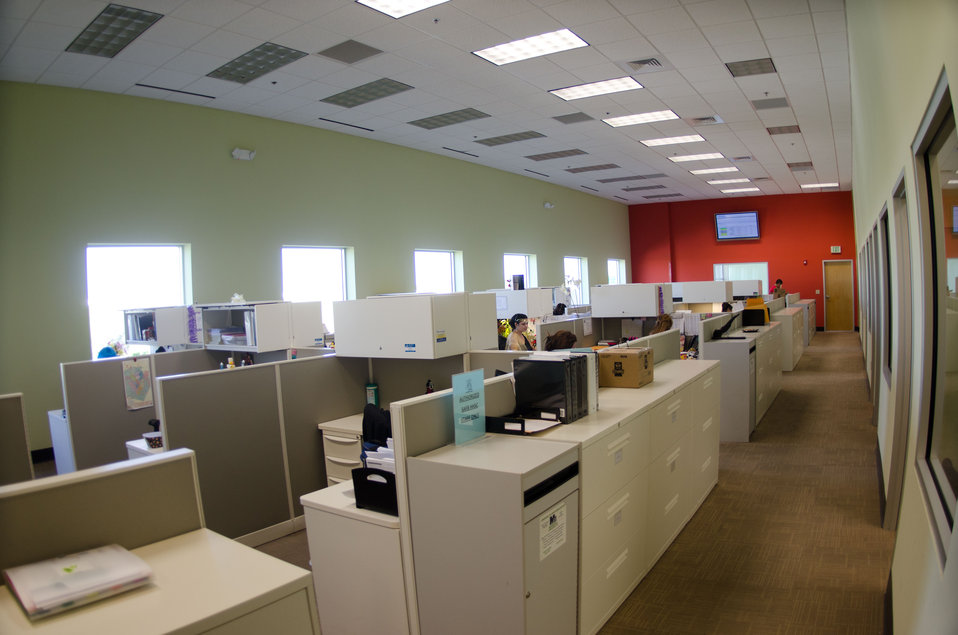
A person in need calling the San Antonio Food Bank (SAFB) on Monday, October 31, 2011 would have reached a Help Center Representative or one of 29 others in the Client Services department at the SAFB headquarters facility in San Antonio, TX. San Antonio Food Bank is a non-profit organization that primarily serves as a clearinghouse receiving and storing truckloads of donated food, produce, and other groceries. SAFB distributes these items to over 500 service agencies that help people in need. They also provide assistance in the application for federal benefits, and host educational and building programs to eligible persons; some of which are provided by the United States Department of Agriculture. It starts with a call to the Client Services department. They handle 5,000 – 6,000 calls each month and serve 16 counties in Southwest Texas. SAFB states, “Nearly one out of every four children and one out of every five adults in Southwest Texas lives in poverty and has difficulty meeting basic nutritional needs.” “We couldn’t do what we do without our partnership with USDA’” said President and CEO Eric Cooper. He continues, “We are privileged in partnering (with the USDA) to feed kids, through the summer, with the Summer Food Service Program, and throughout the year, with the Child and Adult Care Feeding Program (CACFP). To feed seniors, we partner with USDA in the Commodities Supplemental Food Program (CSFP), and the Senior Farmer’s Market (Nutrition) Program. Then work to bring all our (needy) parties together with our Supplemental Nutrition Assistance Program (SNAP) Outreach.
Once families have access to food we believe it is important to educate them. Through the support of the SNAP-Education Program we are able to educate them during their time of need. With this comprehensive approach we are able to get the right food, at the right amount, at the right time, to needy families throughout our community – which allows us to feed the fifty-eight thousand we do, each week.” USDA photo by Lance Cheung.
www.fns.usda.gov/fns/
www.fns.usda.gov/snap/ www.fns.usda.gov/fdd/programs/tefap/